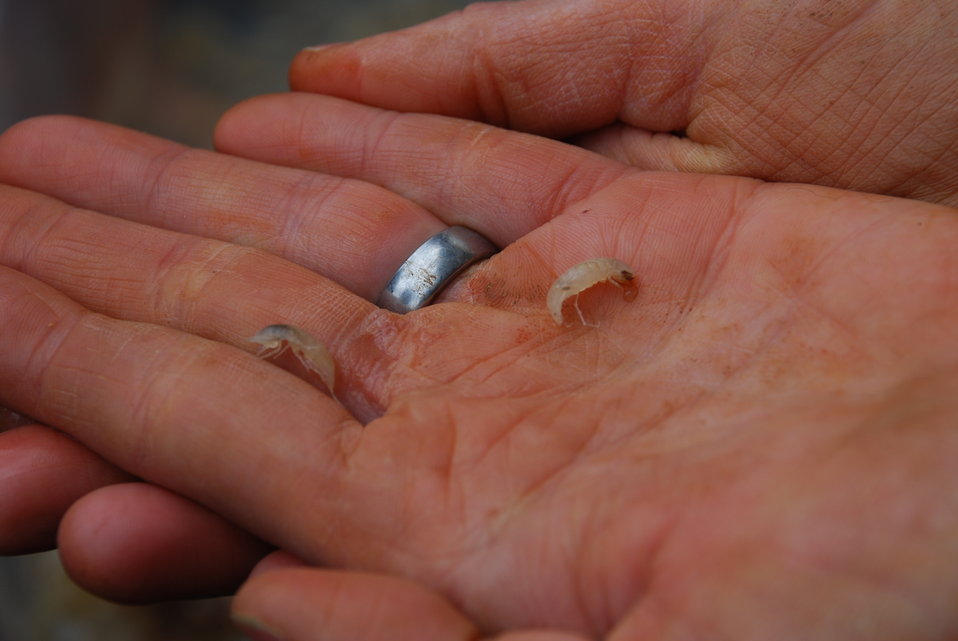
Madison Cave isopod

Closeup view of Madison Cave isopod found during a survey at Steger's Fossure in Virginia.